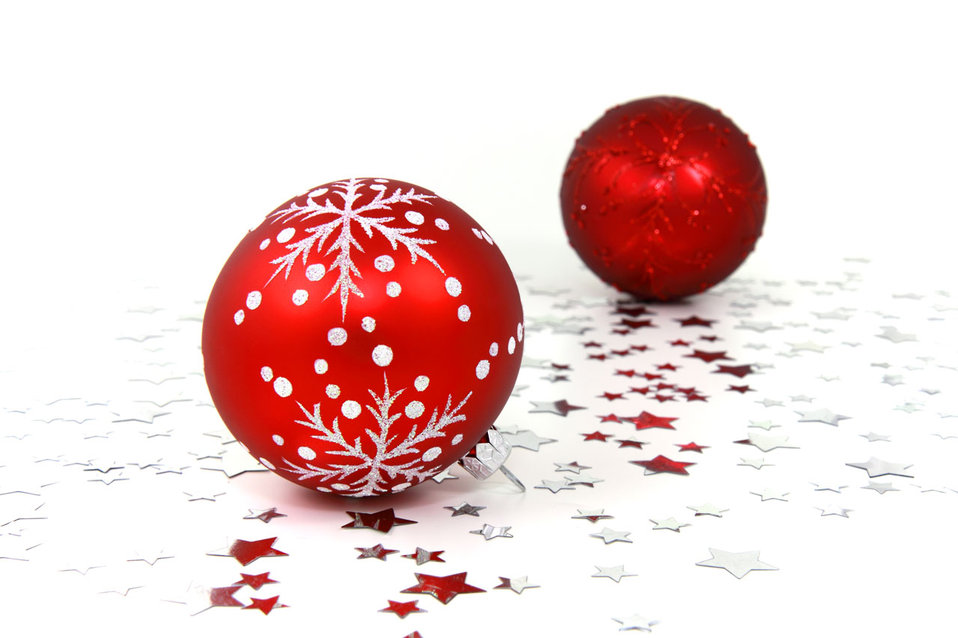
Red baubles

Two red christmas baubles with silver stars.